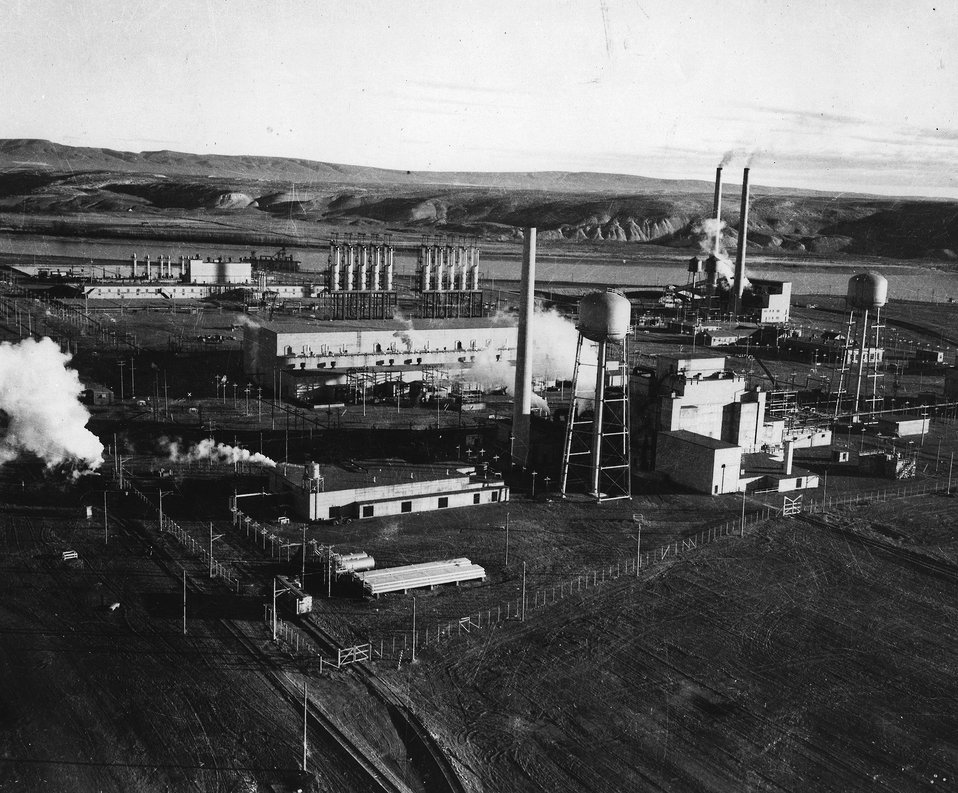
The 100F Reactor at Hanford, Wash., begun in December 1943 and completed in December 1944, one of three such Hanford reactors which made up the Nation's first large-scale plutonium production capability.